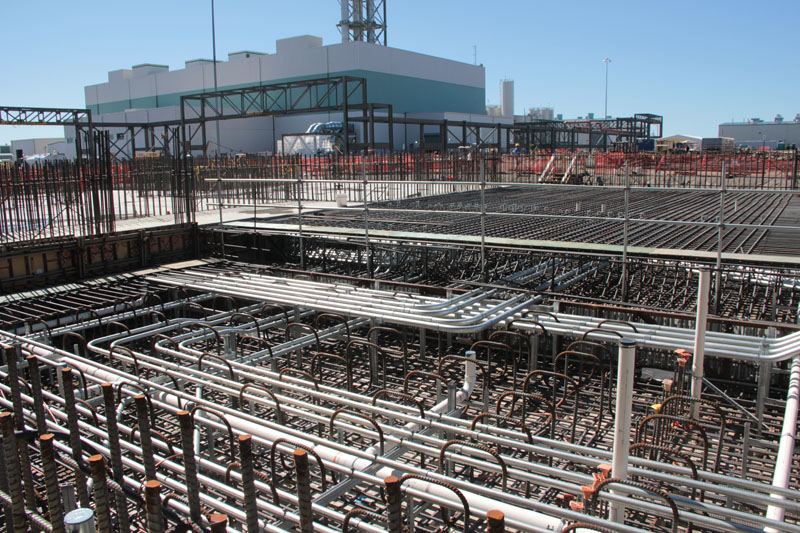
The Pretreatment Facility control room building pad (foreground) and the Low-Activity Waste Facility (background)